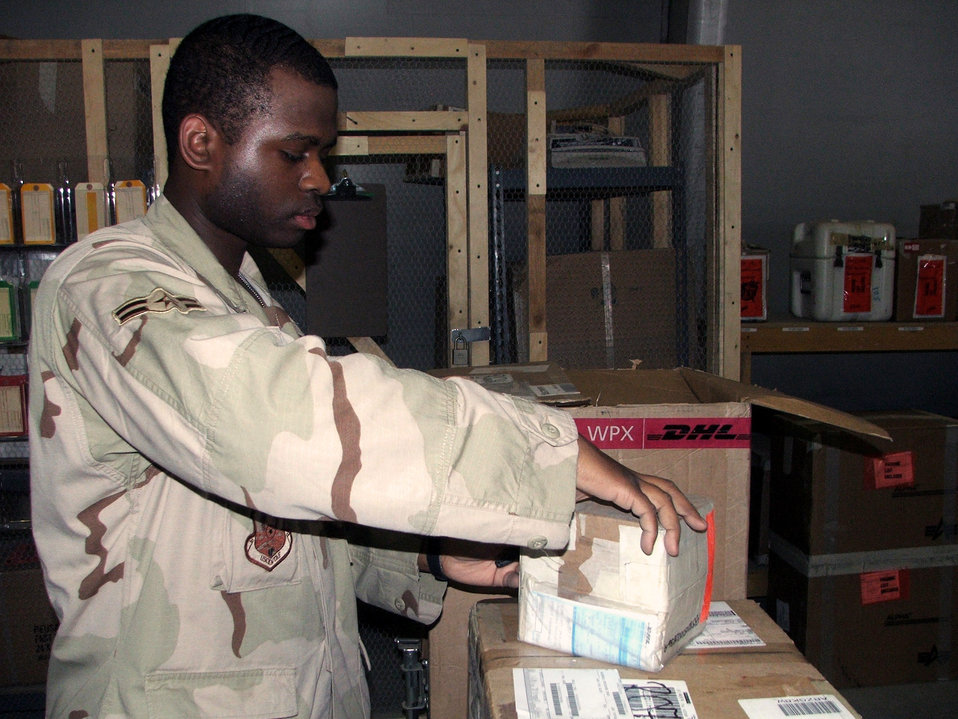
Expeditionary supply technicians order up success

KARSHI-KHANABAD AIR BASE, Uzbekistan -- Airman 1st Class Jerome Clark checks in cargo in the supply warehouse here April 26. He is assigned to the 416th Expeditionary Mission Support Squadron's supply section and is deployed from Grand Forks Air Force Base, N.D.